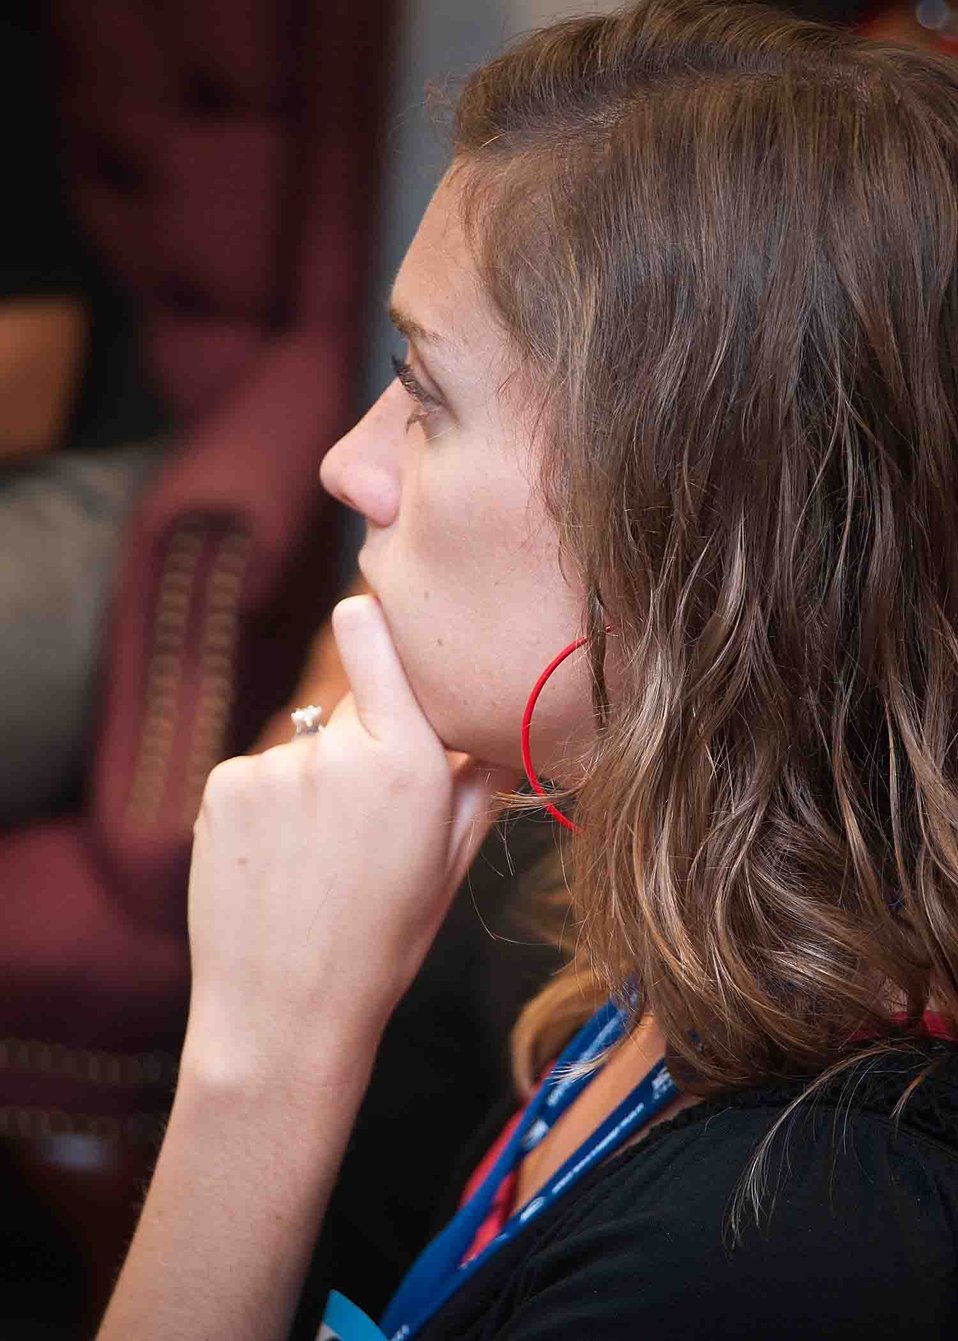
Food Safety Inspection Service employee Kerrie Peterson listens during an Early Resolution and Conciliation Division open house and training workshop for employees and supervisors at the United States Department of Agriculture (USDA) in Washington, DC, Wednesday, Jun. 15, 2011. The primary goal of the workshop was to strengthen the Alternative Dispute Resolution (ADR) community through outreach, training and partnership with agencies in USDA and make employees aware of ADR.